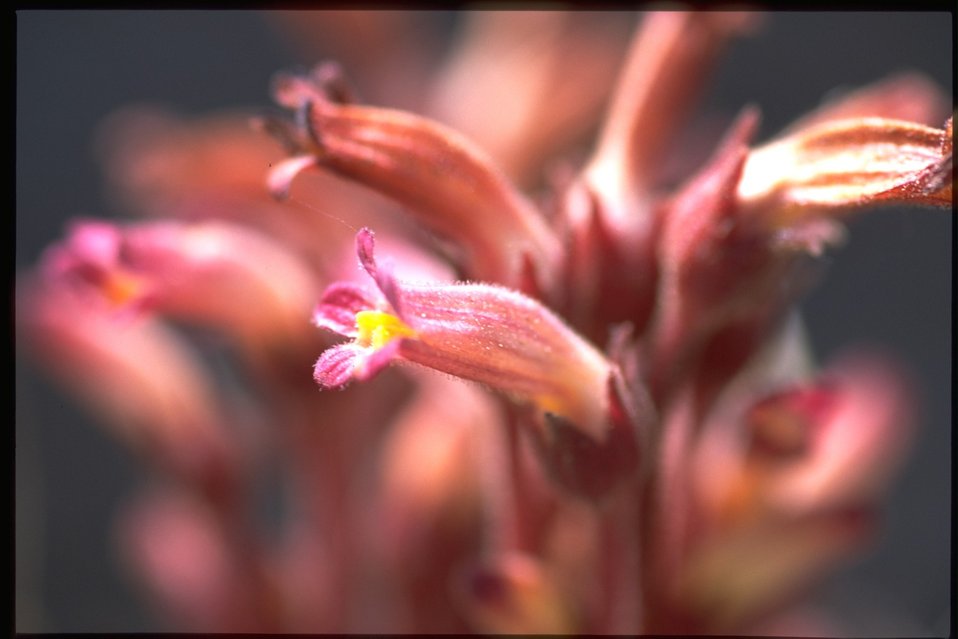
Closeup shot of Orobanche.